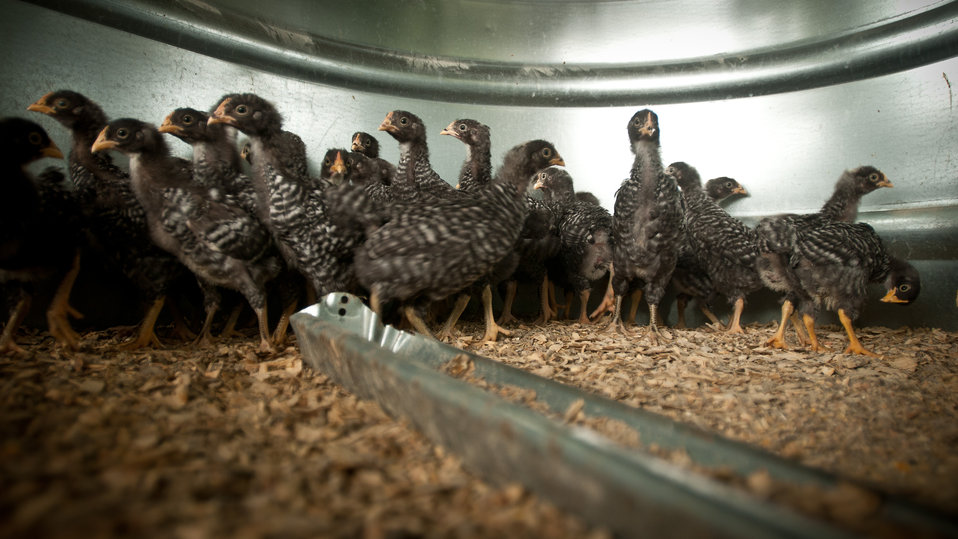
Chicks at Nick’s Organic Farm, in Adamstown, MD, on Friday, July 12, 2013. The farm, owned by Nick Maravell, produces Black Angus beef, chicken, turkey, eggs, hay, soybeans, corn, alfalfa, orchard grass, rye; and other crops. The cattle are100% grass-fed receiving certified organic pasture, certified organic hay (in winter), water and mineral salts mixed with sea kelp. The cattle are not fed hormones, antibiotics or animal products. Poultry feed from grain is ground from organic grain. The poultry also graze on organic pastures. The farm has conducted on-farm research with federal, state and non-profit agencies to refine organic practices.